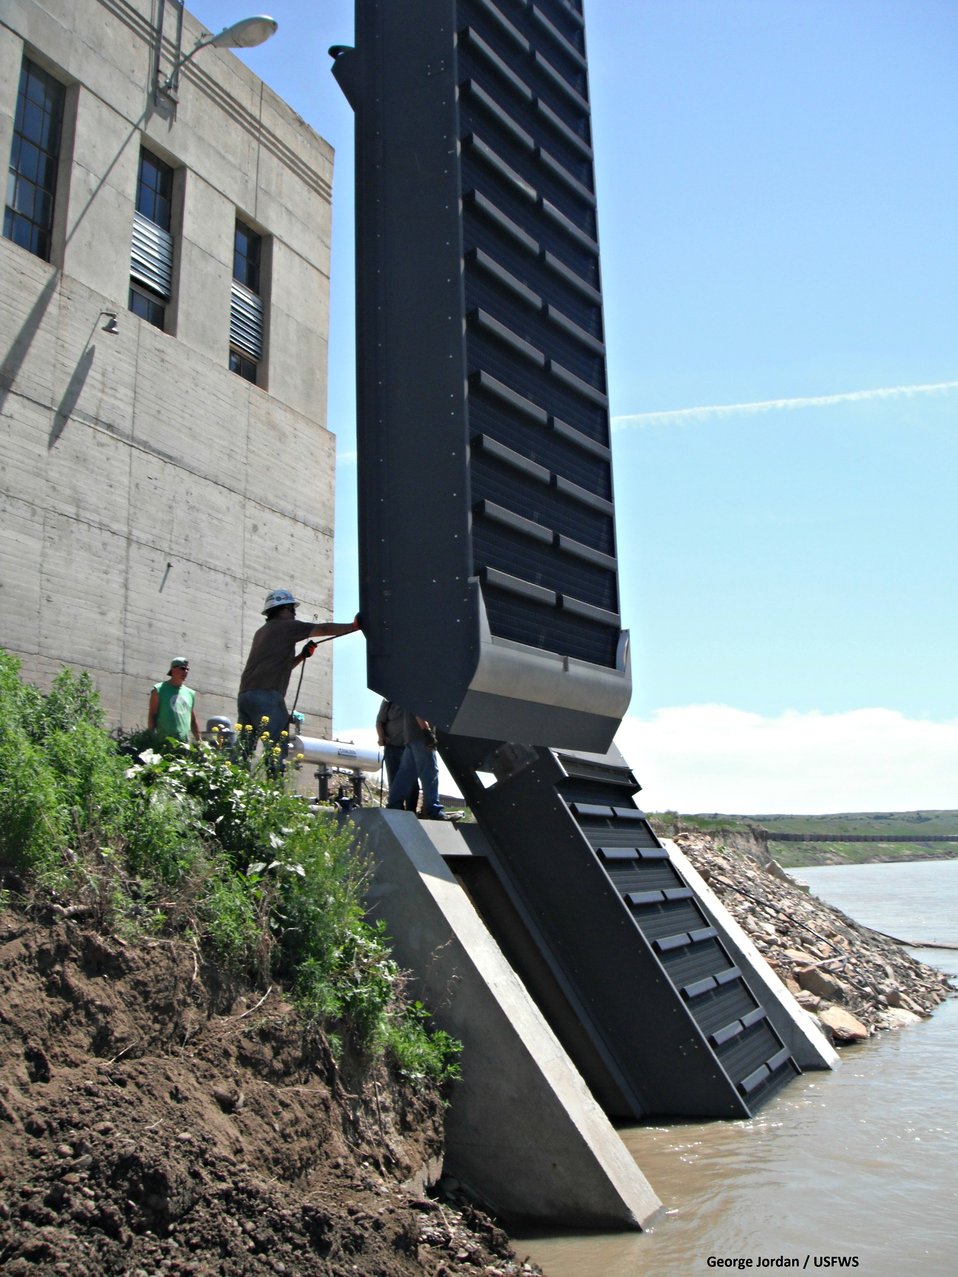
Setting 2nd screen

The second screen will soon be at rest with its new neighbor, affectionately and cleverly named 'Screen 1', but perhaps 'Big Jim' is more fitting.